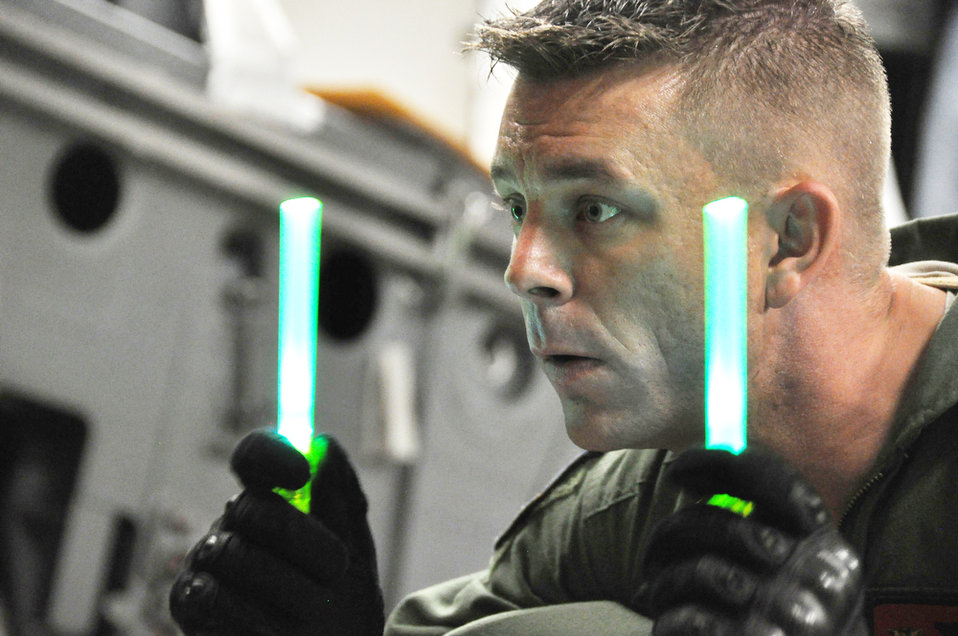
Dolphins fly to New Caledonia with Hickam C-17 crew

Tech. Sgt. Kevin Collette guides a K-loader toward a C-17 Globemaster III Nov. 8, 2009, at Hickam AFB, Hawaii. Sergeant Collette and the rest of his crew transported dolphins from the Navy Marine Mammals Program to Noumea, New Caledonia, where they will participate in Lagoon Minex 2009, which is a humanitarian project where U. S. Navy, French, Australian and New Zealand demolition crews will remove mines left over from World War II from the surrounding water of the area. Sergeant Collette is a 15th Airlift Wing loadmaster. He is a native of Worcester, Mass.